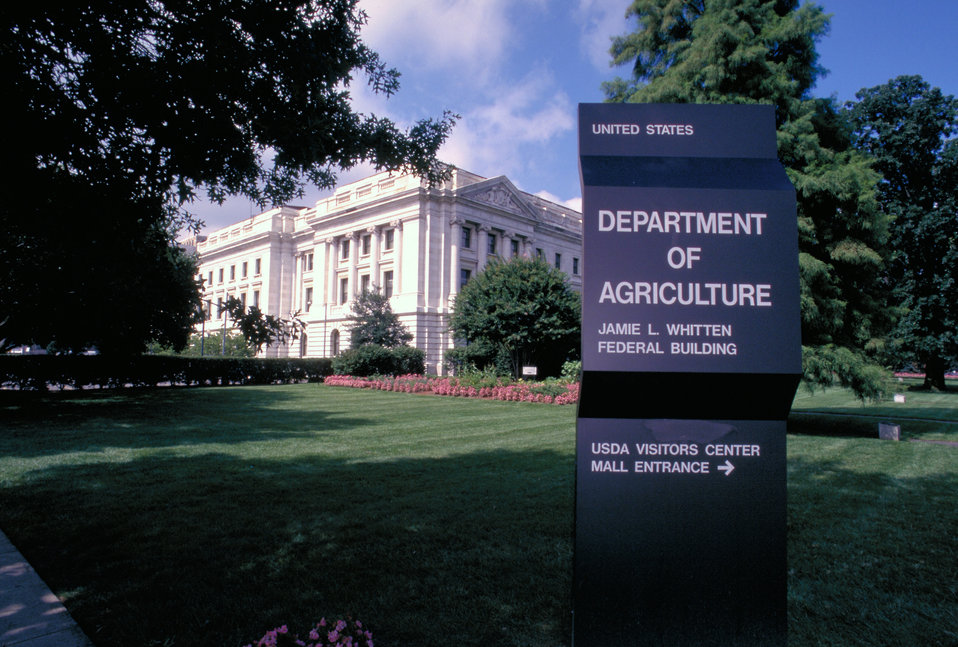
The Jamie L. Whitten, Federal Building, U.S. Department of Agriculture in Washington, D.C.